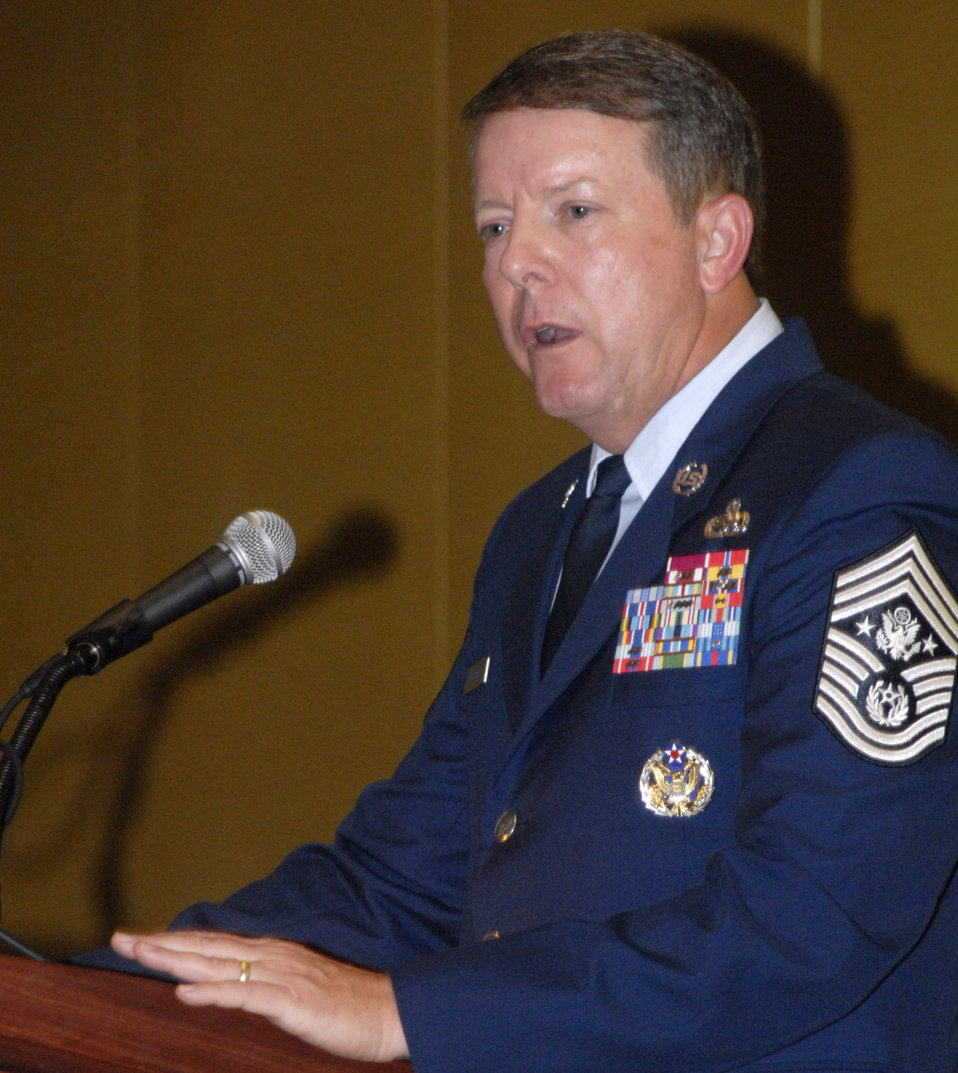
AFA convention features command chiefs forum

Chief Master Sgt. of the Air Force Rodney J. McKinley hosts a command chiefs forum Sept. 24 during the Air Force Association's Air & Space Conference and Technology Exposition in Washington. The forum provided Airmen there the opportunity to communicate directly with chiefs about issues of concern to the enlisted force.